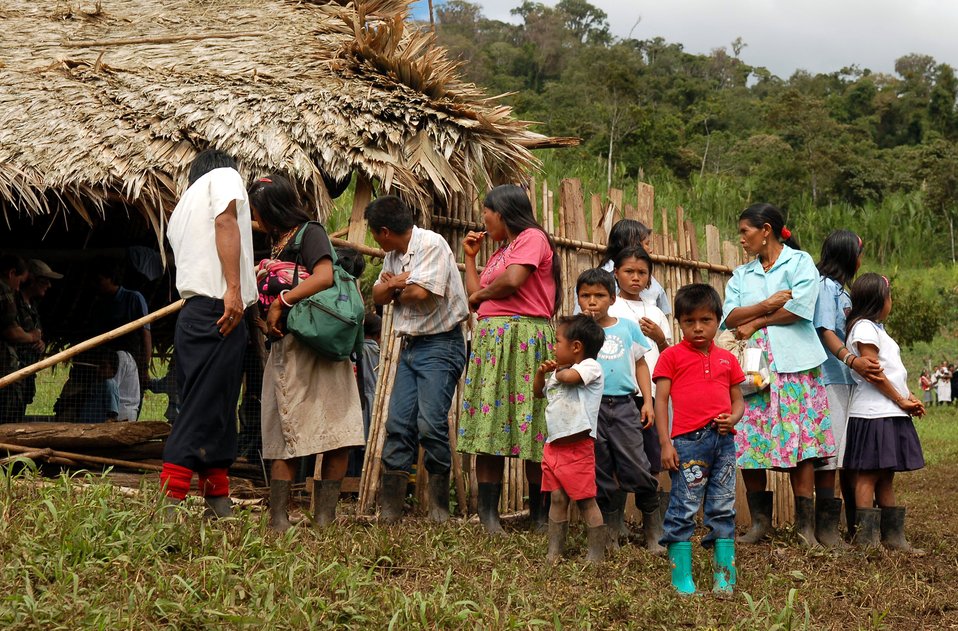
American servicemembers deploy to Costa Rica

Native Costa Ricans line up outside a makeshift clinic to be seen by nurses from Joint Task Force-Bravo's medical element Dec. 18 at Piedra Mesa, Costa Rica. JTF-Bravo deployed 28 servicemembers from Soto Cano Air Base, Honduras, to Costa Rica at the invitation of the country's ministry of health for a medical readiness training exercise.